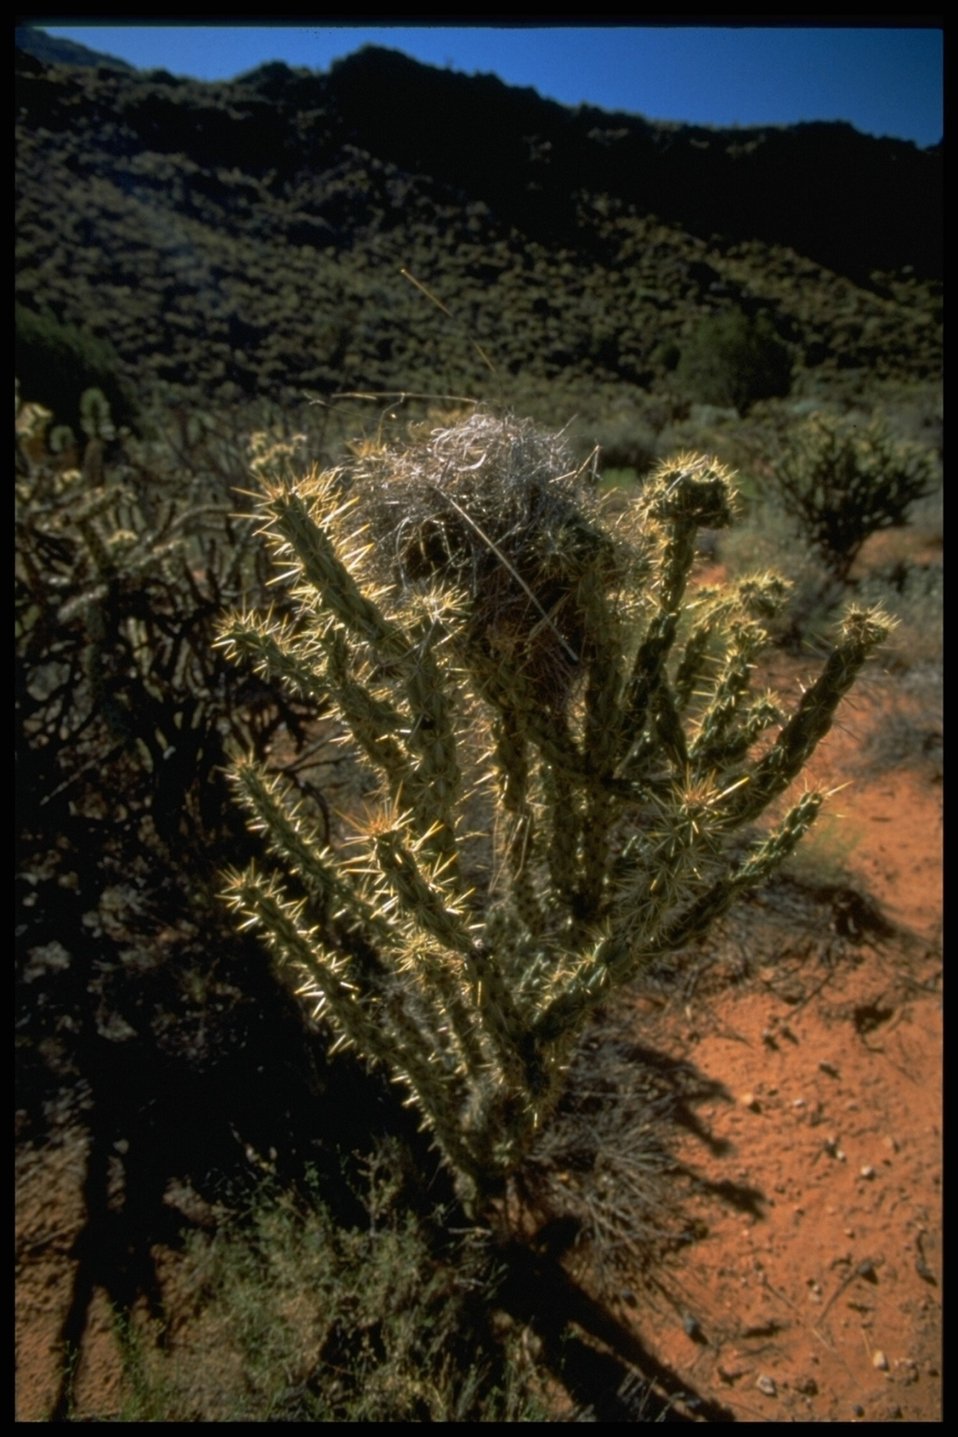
A cactus is holding a bird nest at the Parashant National Monument.